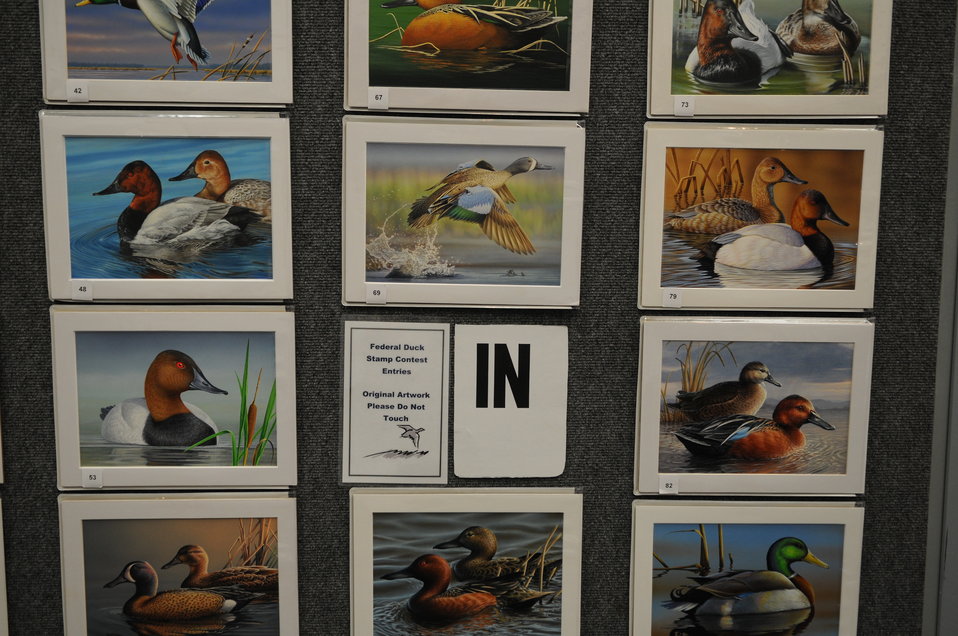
Artwork remaining 'in' after day one of judging